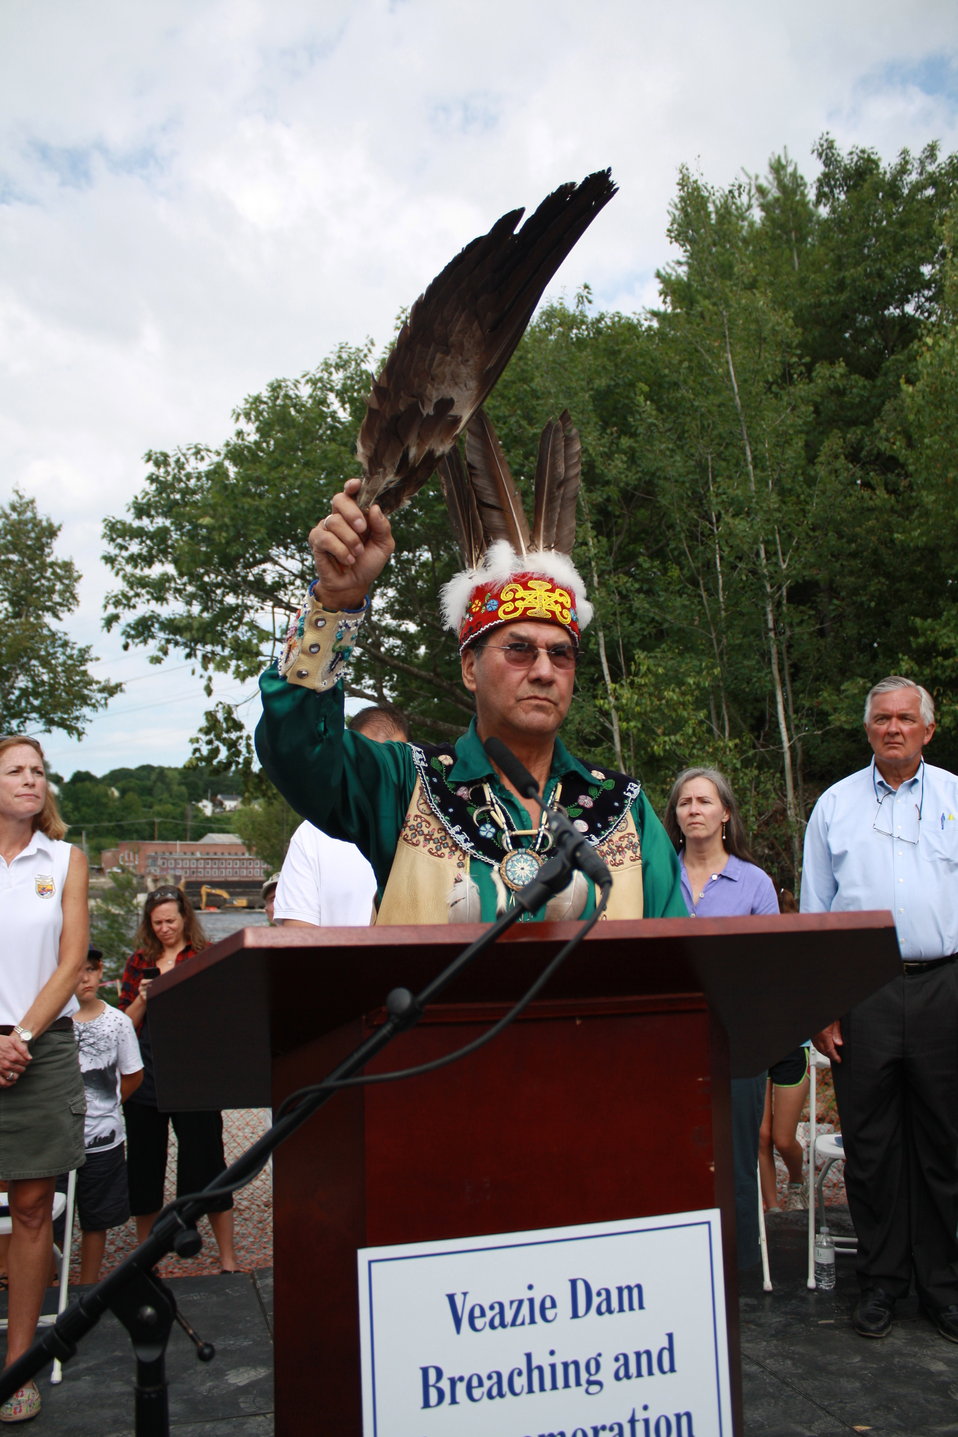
Veazie Dam Removal

Penobscot Indian Nation Elder Butch Phillips begins the traditional smudging ceremony.